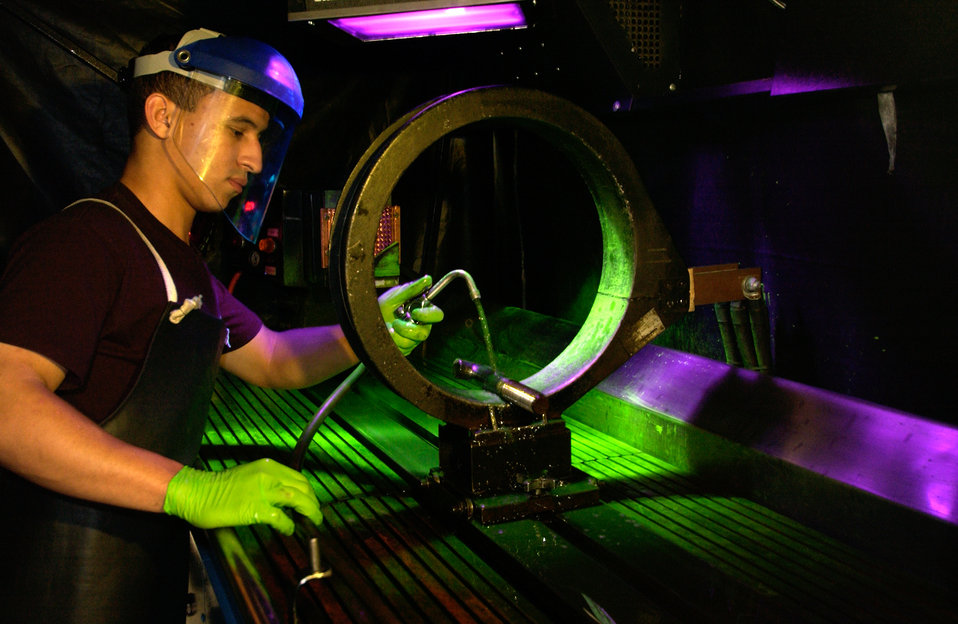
NDI inspections

CHARLESTON AIR FORCE BASE, S.C. -- Airman 1st Class Kenny Payamps uses fluorescent magnetic particle testing to inspect a water separator bolt from a C-17 Globemaster here. Airman Payamps is a non-destructive inspection testing journeyman assigned to the 437th Maintenance Squadron.